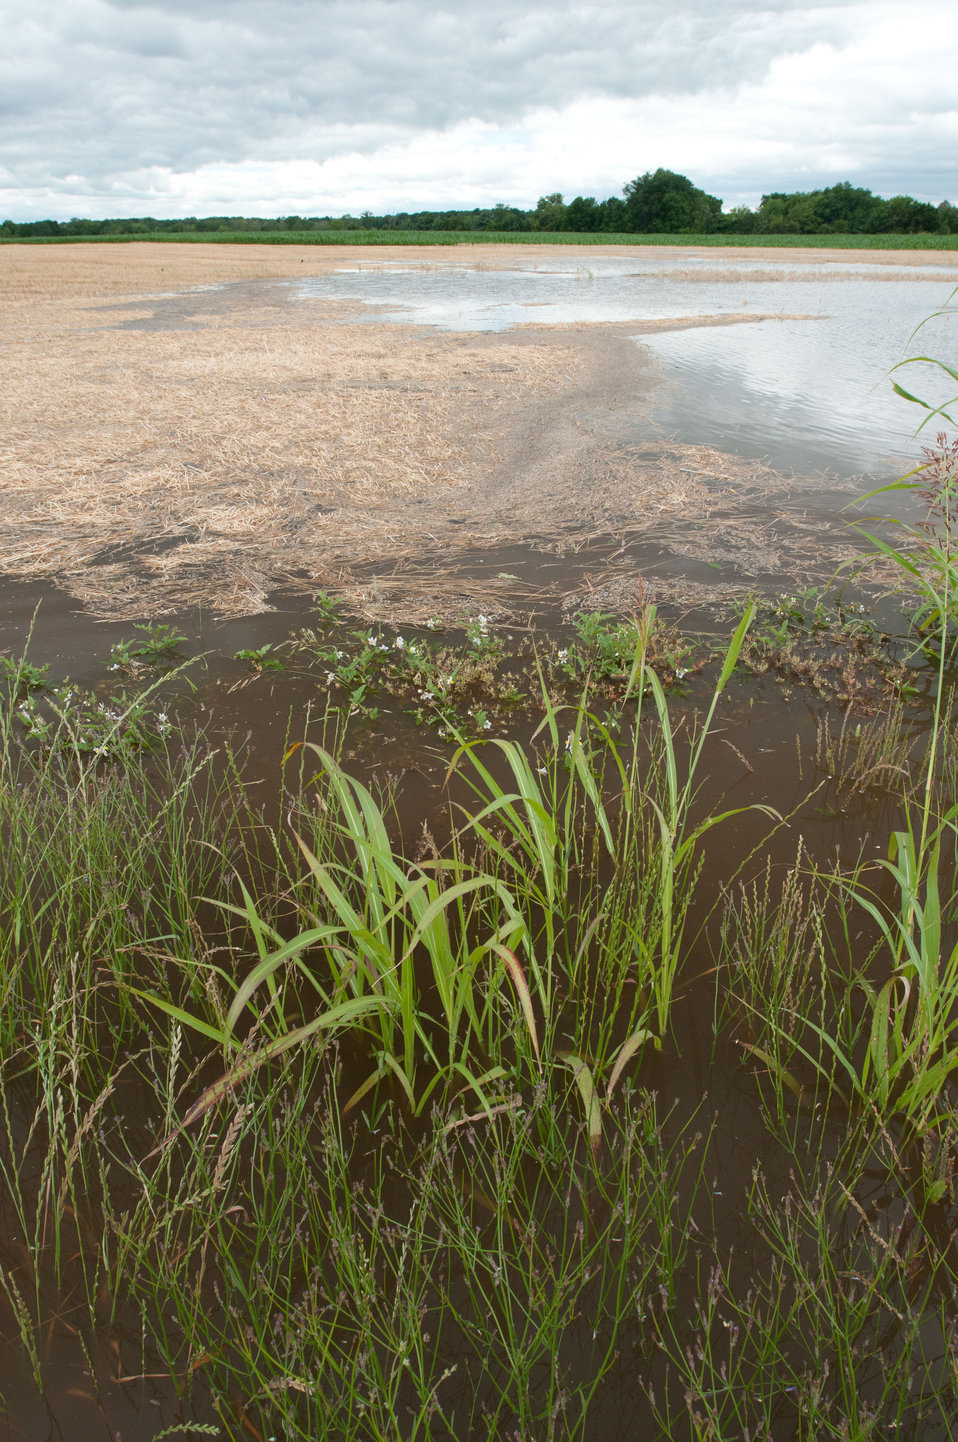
To save crops that threatened by Mississippi River floodwaters farmers harvested wheat two weeks early from the Yazoo River area of MS near Yazoo City, MS, on Monday, May 16. 2011.